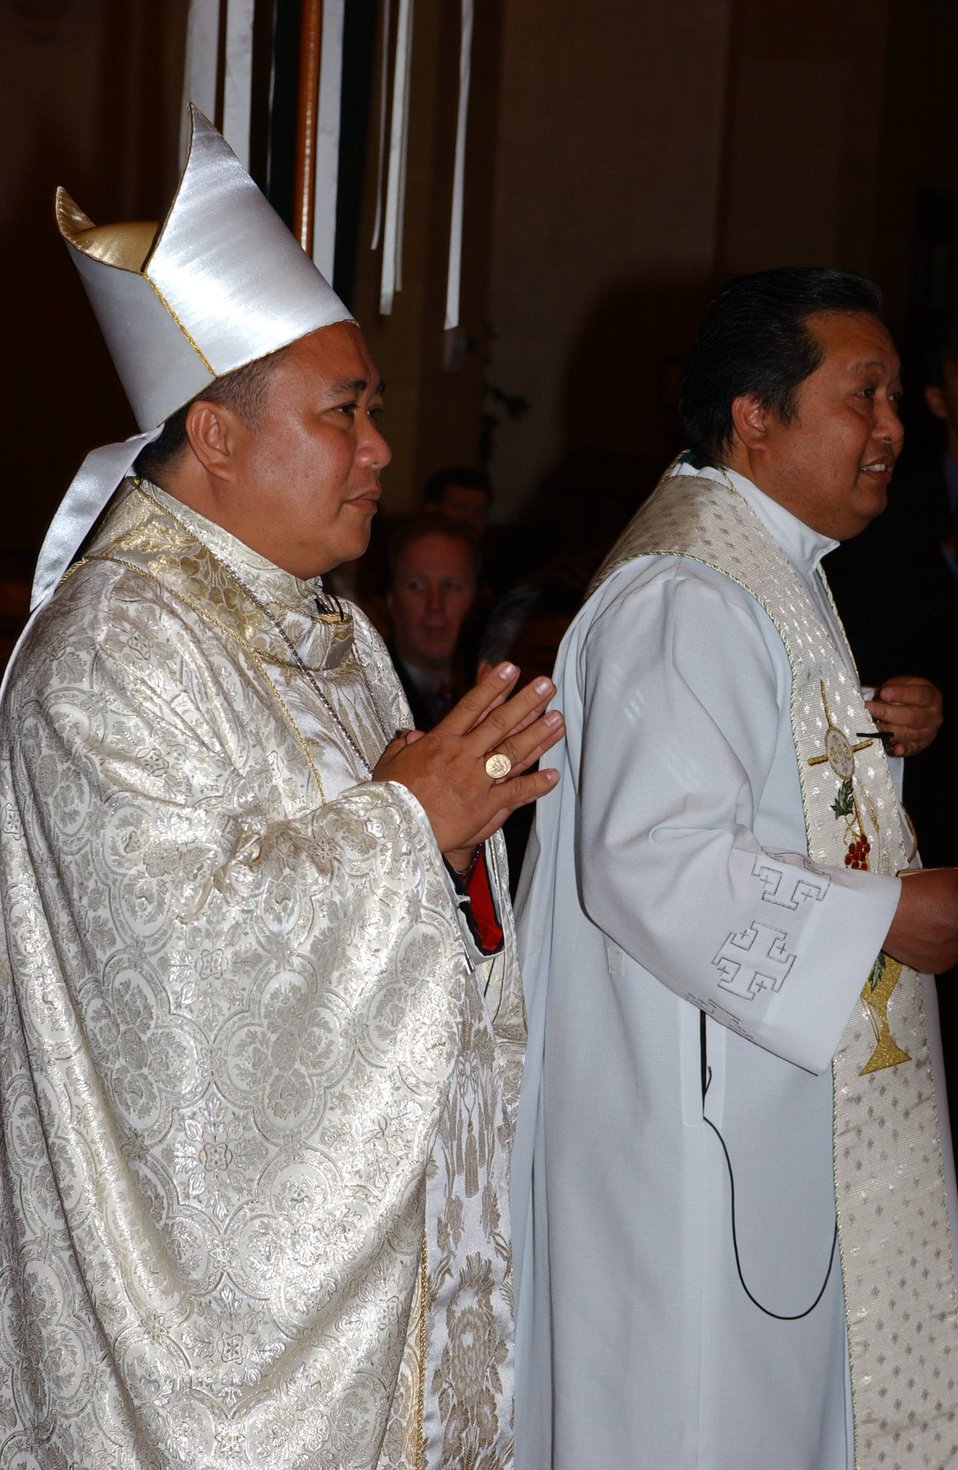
Most Reverend Antonieto D. Cabajog, D.D., Bishop of Surigao, Philippines, during the Tungol Wedding in Chicago, Illinois